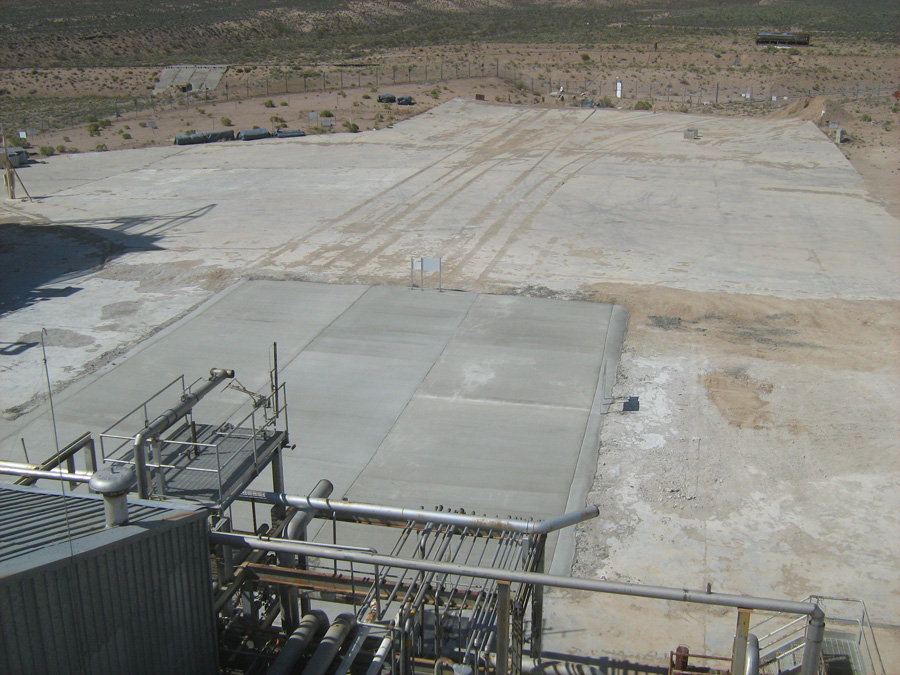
More Recycling Means Less Waste for DOE Complex

Rocket engines were tested in separate structures called test cells. Test Cell C, seen here after demolition, was one of three test cells located in the Nuclear Rocket Development Station that ceased operations in 1973. Lead recovered during demolition had been an integral part of the facility’s construction, serving as a primary material for radiation shielding.

In September 2011, a total of 33,000 pounds of lead was shipped from the NNSS to the recycling company, Toxco Inc. Toxco, which received the lead in the form of bricks, battery plates, and counterweights, plans to use the material to make protective shielding for government and commercial nuclear industrial operations.